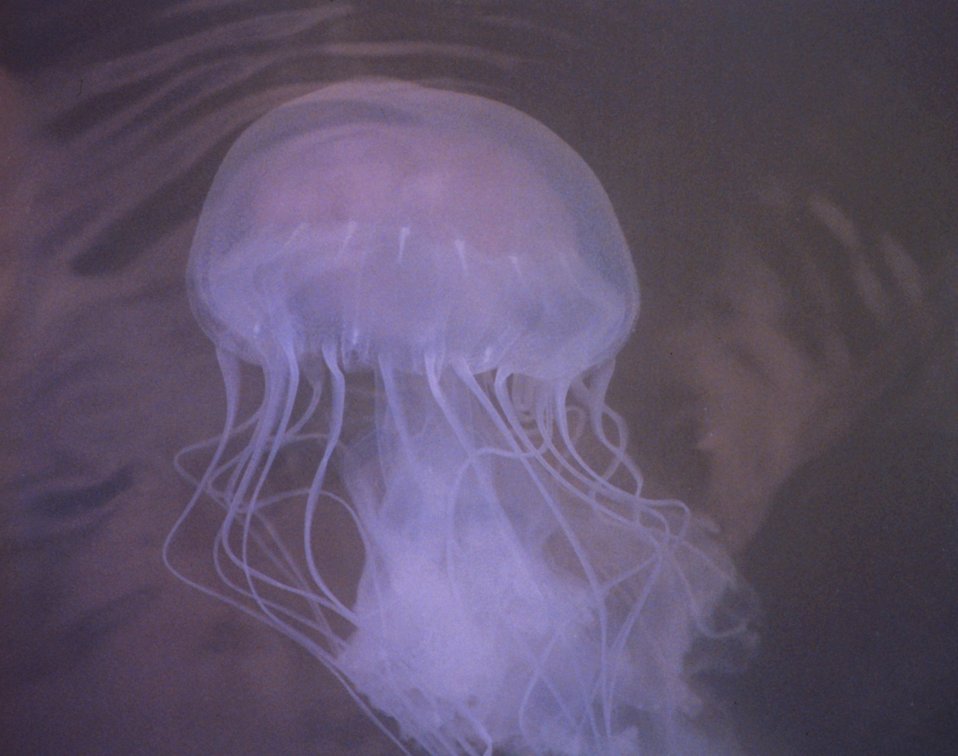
The bane of Chesapeake Bay swimmers, the stinging sea nettle, Chrysaora quiquecirrha.